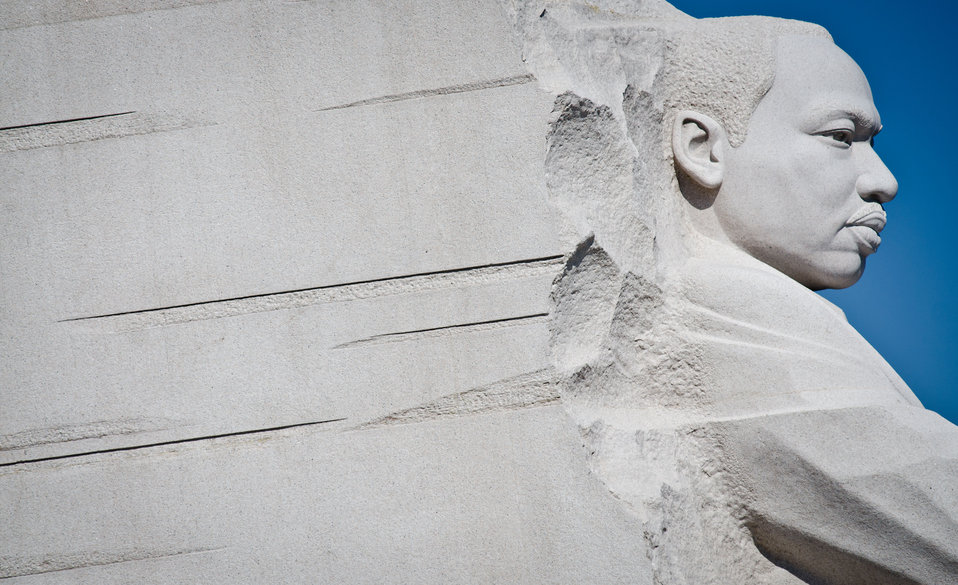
Martin Luther King, Jr. Memorial in Washington, DC, on Saturday, October 8, 2011.